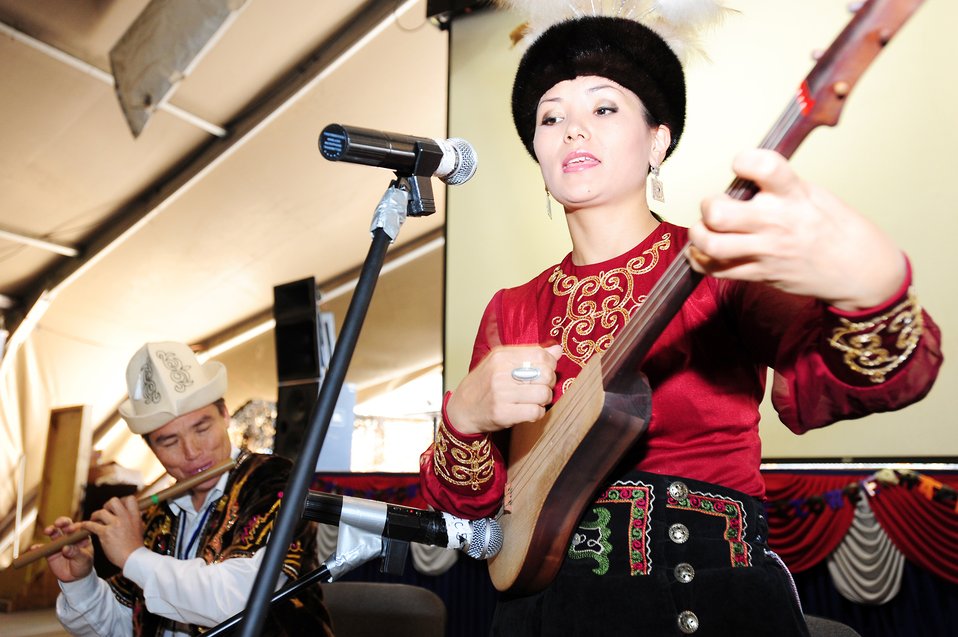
Airmen learn traditions during Kyrgyz Cultural Day

Gulinara Raimalieva plays a komuz while Sovet Adrakhaev plays a flute as part of Kyrgyz Culture Day at the Transit Center at Manas, Kyrgyzstan, Oct. 24, 2009.